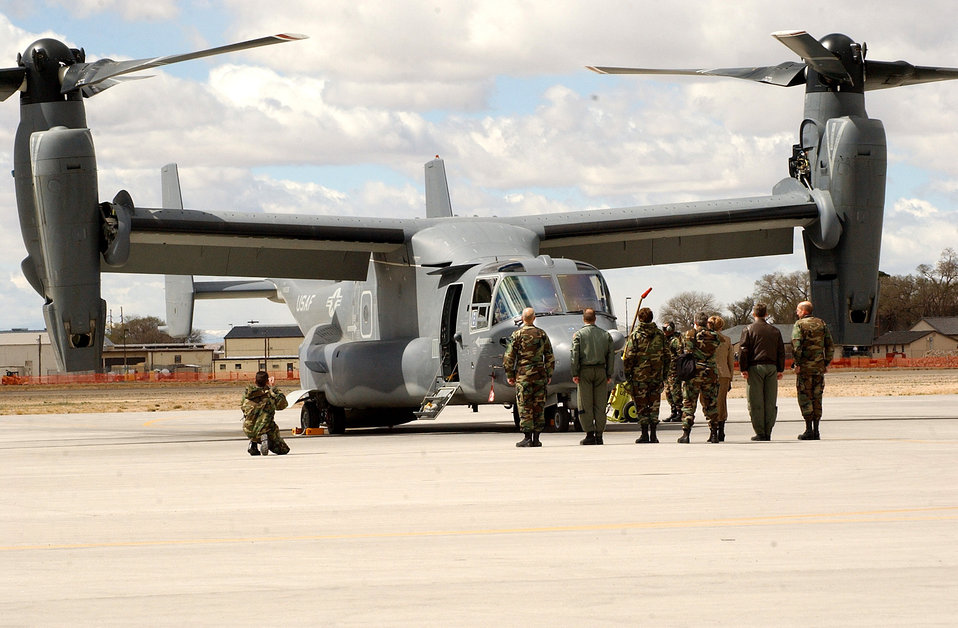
Osprey gets new nest

Airmen at Kirtland AFB, N.M., prepare to greet Lt. Gen. Michael W. Wooley, commander of the Air Force Special Operations Command. General Wooley delivered the Air Force's first operational CV-22 Osprey to the 58th Special Operations Wing Monday, March 20, 2006.